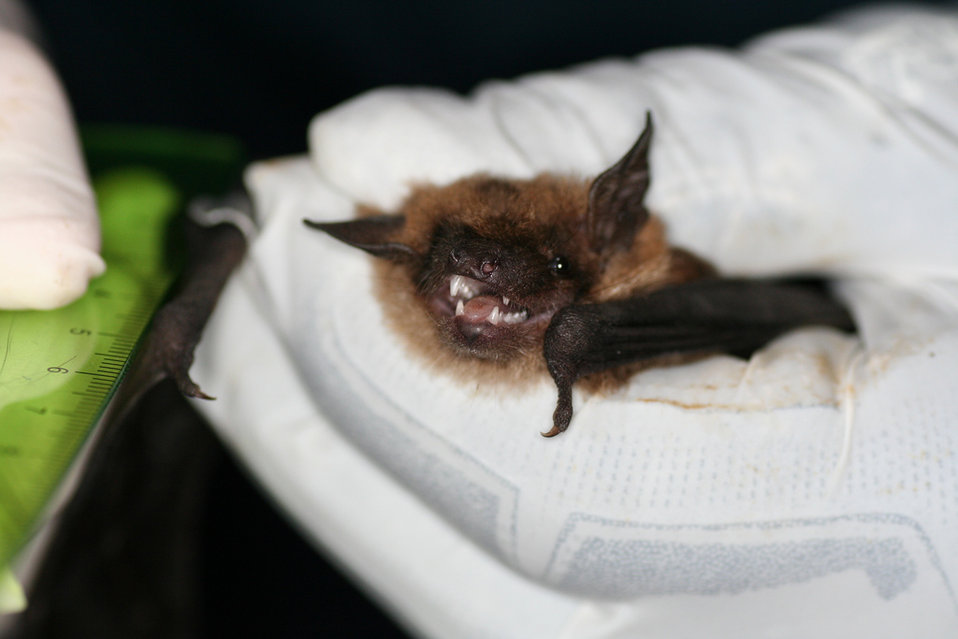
Measuring Big Brown Bat